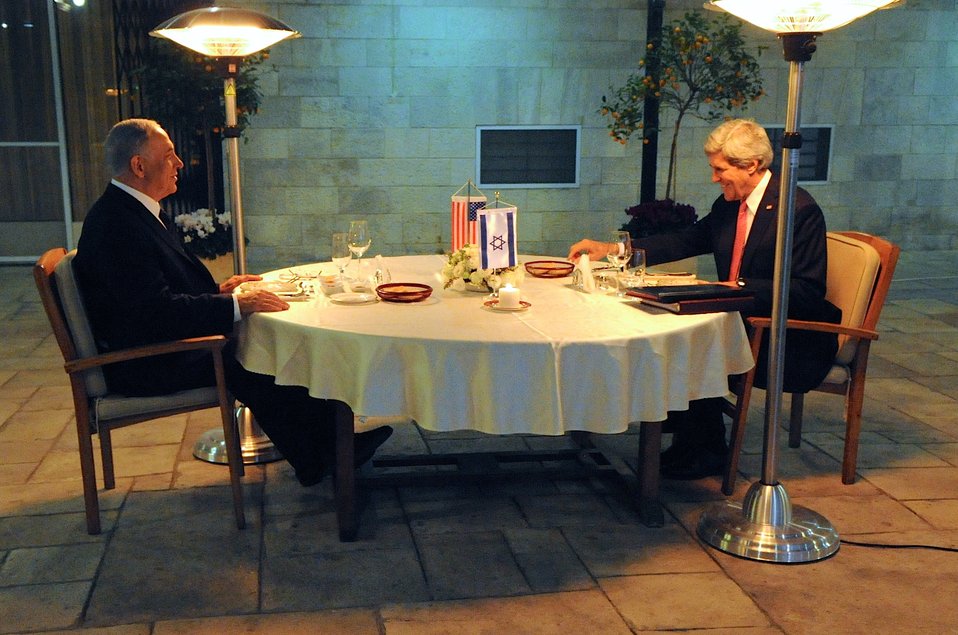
Israeli Prime Minister Netanyahu, Secretary Kerry Share Dinner in Jerusalem

Israeli Prime Minister Benjamin Netanyahu and U.S. Secretary of State John Kerry settle into their seats in the courtyard of the Prime Minister's Residence in Jerusalem before a dinner meeting focused on Middle East peace on January 4, 2014.